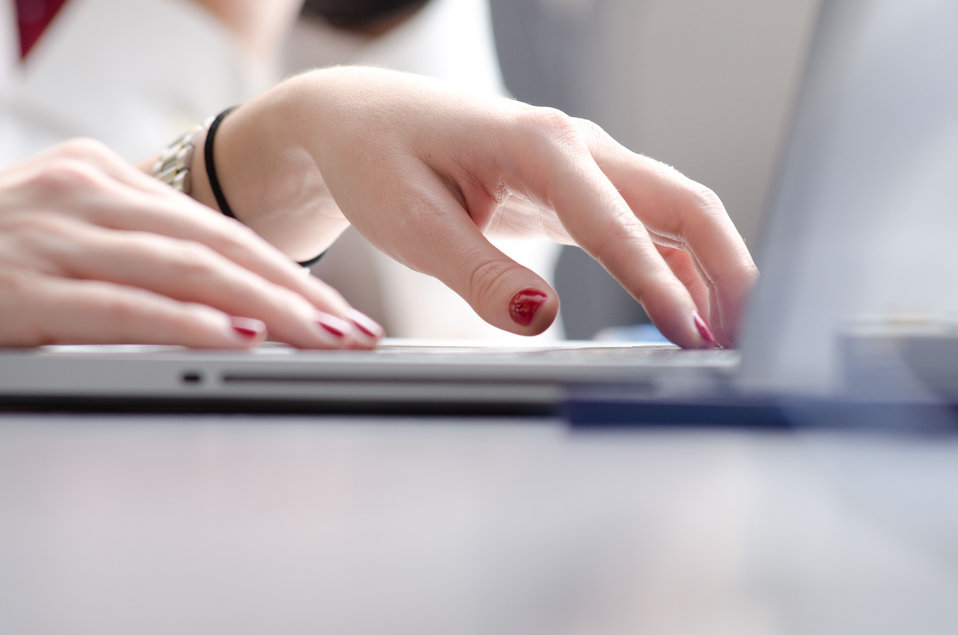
U.S. Department of Agriculture Office of Communications Director of Web Communications Amanda Eamich types in Senior Advisor to the Secretary for Environment and Climate Change Robert Bonnie's (not seen) reply to an online question, during a live Virtual Office Hours session he is hosting on Twitter, in Washington, D.C. on Thursday, November 29, 2012. The event provided a question and answer opportunity and highlighted U.S. Department of Agriculture's (USDA) record on conservation achievements and efforts to reconnect Americans to the great outdoors were answered during the event. Questions were submitted live and in advance to the @USDA Twitter account using the hashtag #AskUSDA.